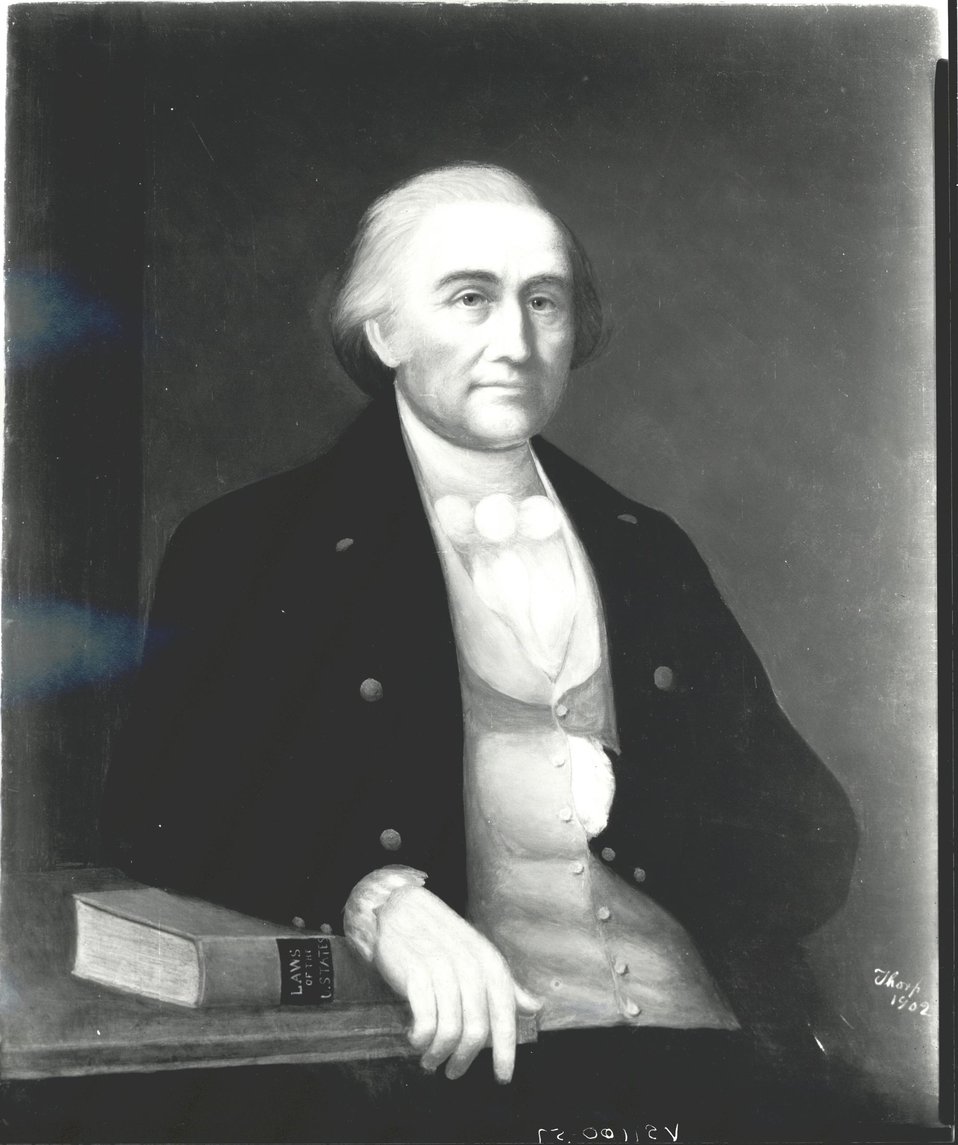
Robert Smith, U.S. Secretary of State, March 6, 1809 to April 1, 1811